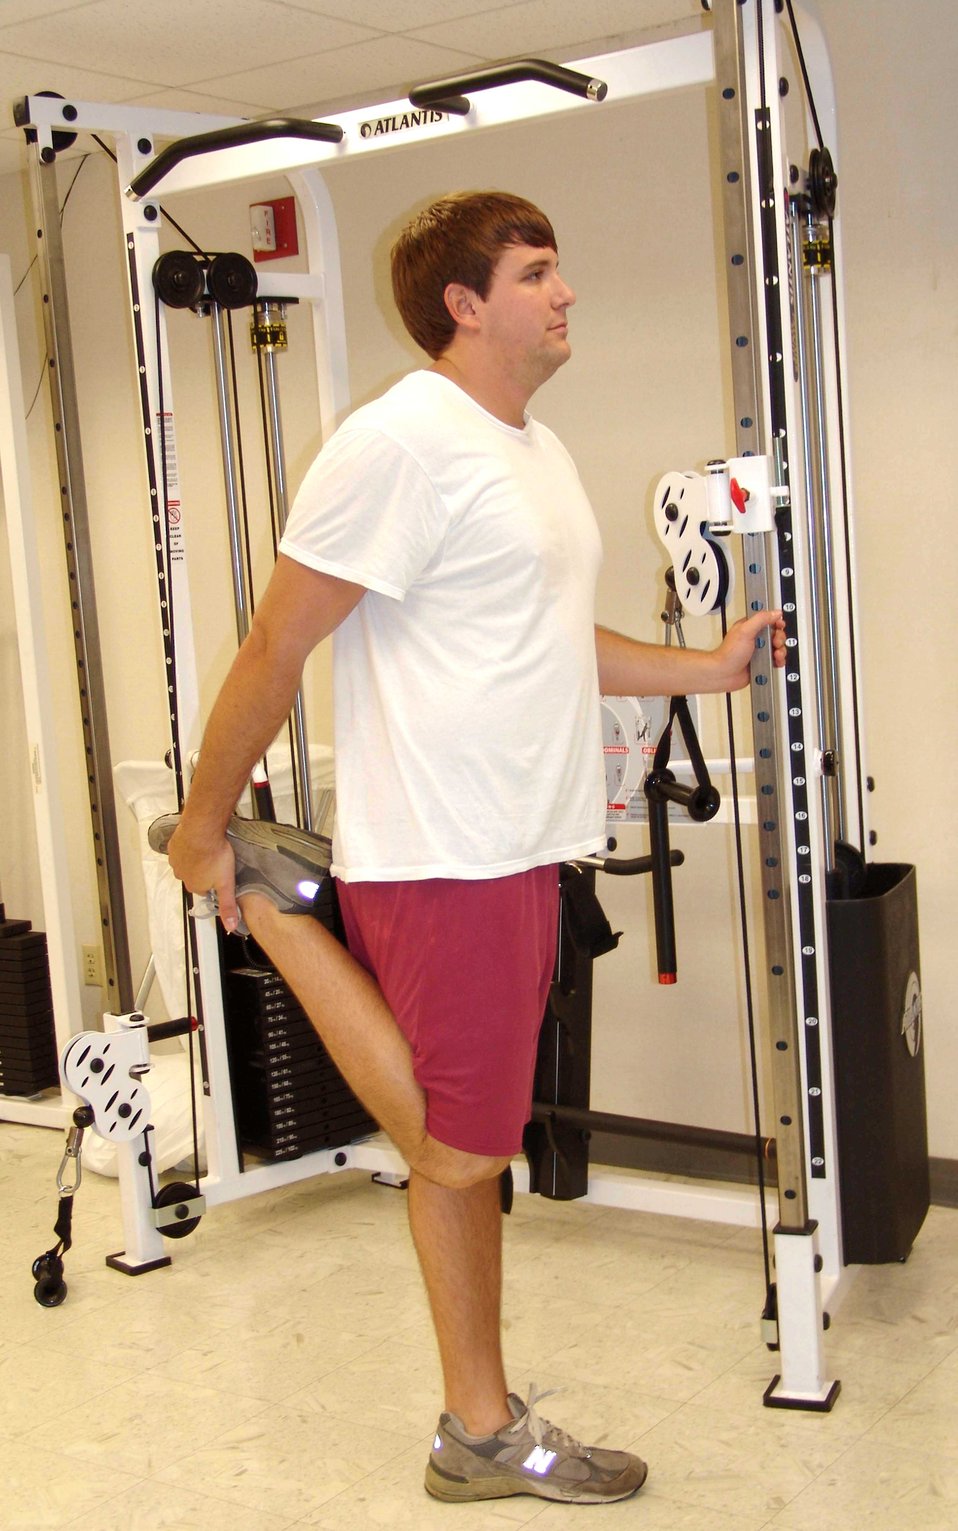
Physical Fitness

EGLIN AIR FORCE BASE, Fla. -- Sean Capik demonstrates the proper form for a quadraceps stretch. Physical therapists advise Airmen to stretch before and after exercise to prevent injuries caused by running and other activity.